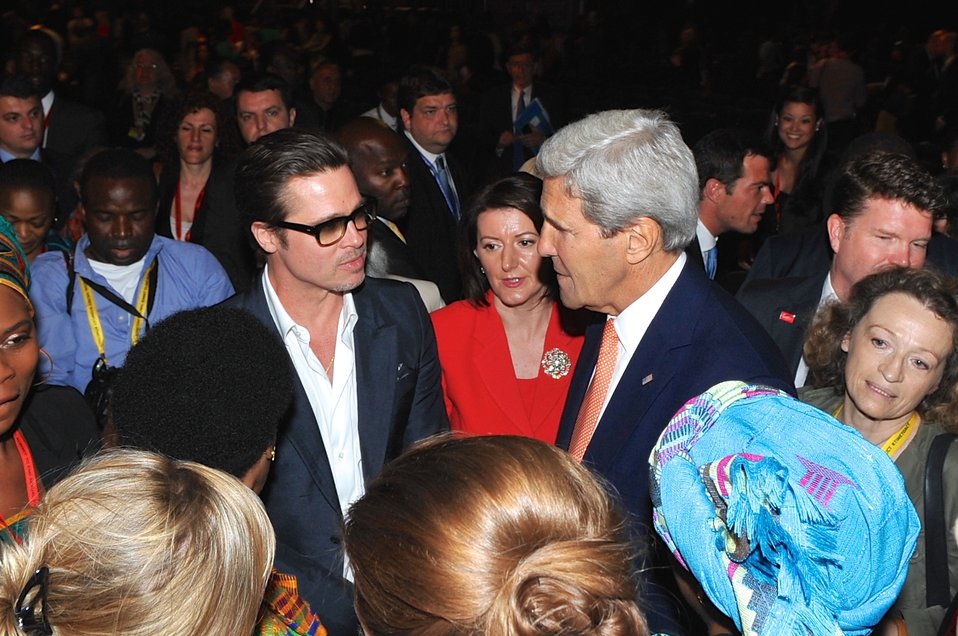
Actor Pitt, Secretary Kerry Chat at Conclusion of 2014 Global Summit to End Sexual Violence in Conflict

Actor Brad Pitt chats with U.S Secretary of State John Kerry at the conclusion of the 2014 Global Summit to End Sexual Violence in Conflict - headlined by his fiancée, actress and UN Envoy Angelina Jolie - in London on June 13, 2014.